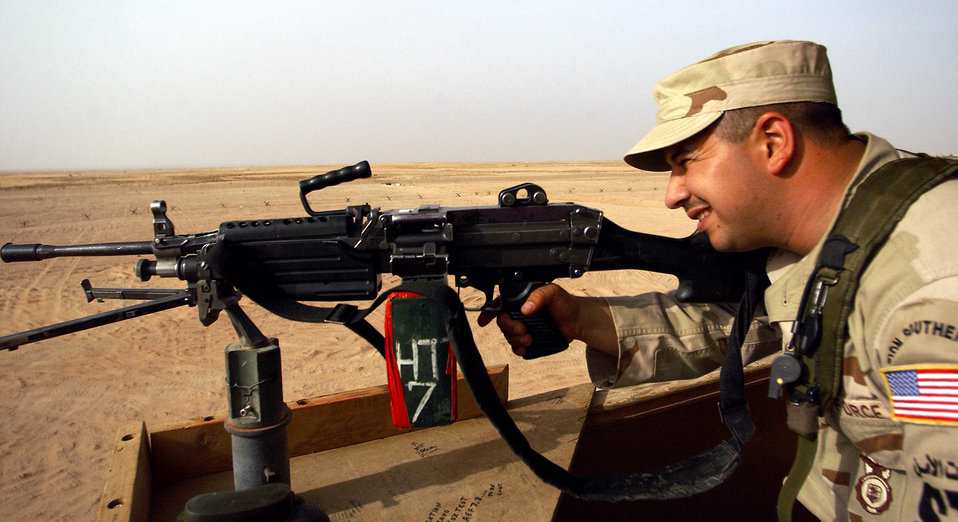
Setting the sights

OPERATION IRAQI FREEDOM -- Staff Sgt. Angel Degennaro, a security forces craftsman deployed from the 301st Security Forces Squadron, Carswell Air Reserve Station, Fort Worth, Texas, to the 363rd Expeditionary Security Forces Squadron, sets up an M-249 machine gun prior being relieved by night shift in a guard tower on April 3.